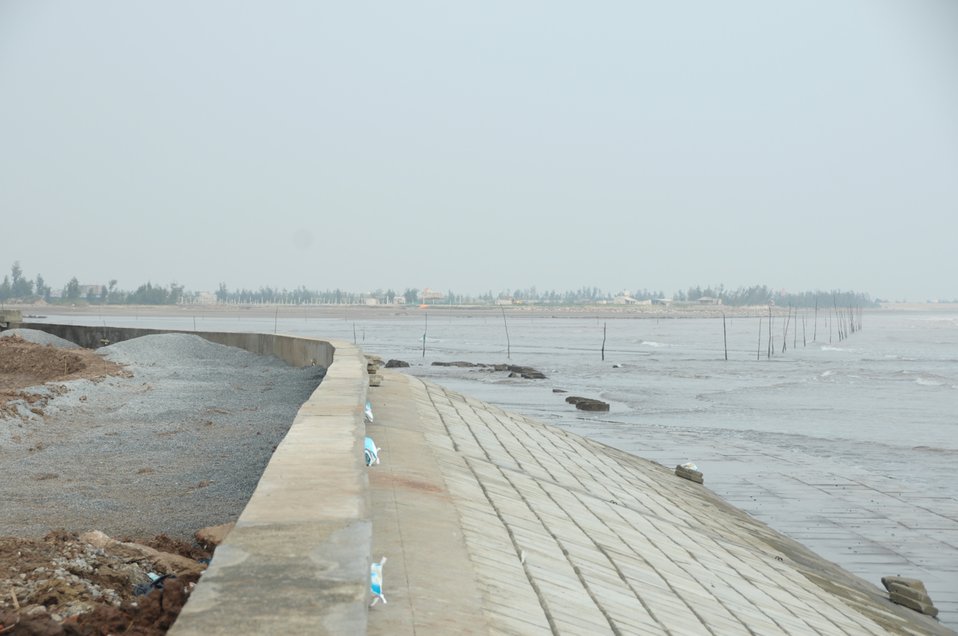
A coastal defense dyke in Quat Lam town, Nam Dinh.

Quat Lam, Nam Dinh. January 16, 2014.